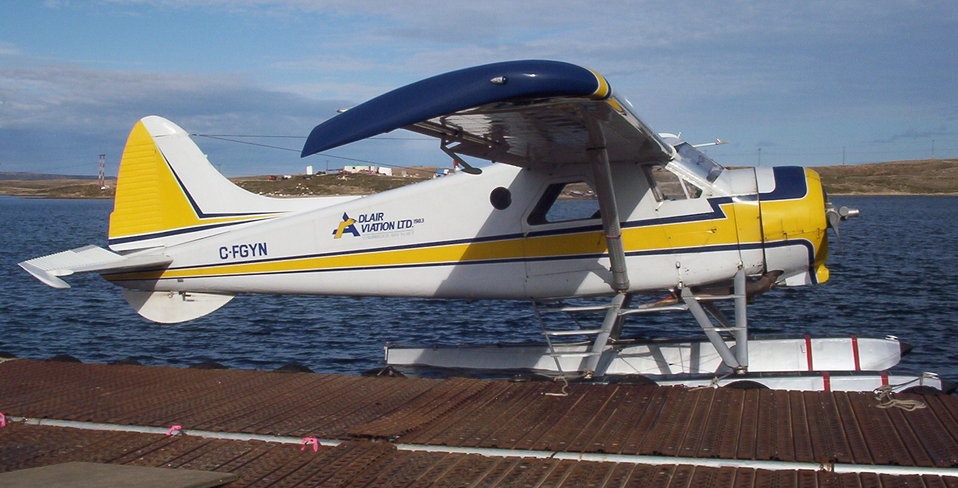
C-FGYN Adlair Aviation Ltd. de Havilland Beaver (DHC2) Mk.I at the Adlair Float Base, Cambridge Bay, Nunavut, Canada.